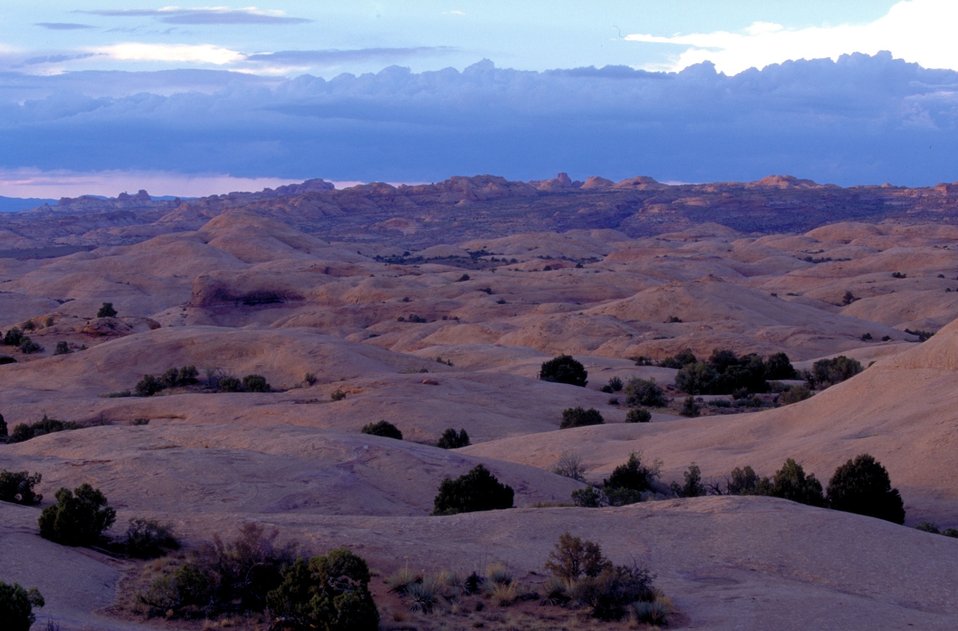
Moab Slickrock Bike Trail near Moab, Utah.